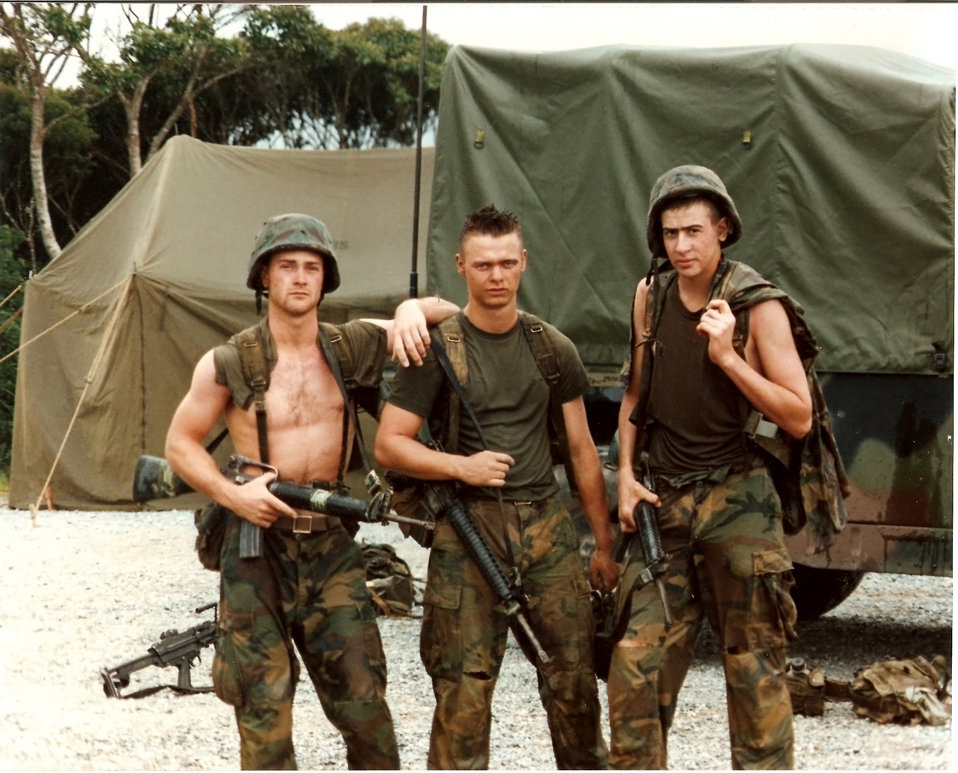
Addison Mohler, the refuge wildlife biologist for Deer Flat National Wildlife Refuge, enlisted in the U.S. Marine Corps on my 17th birthday during the height of Desert Storm. He says: “I wanted to a be grunt and was guaranteed it, so after boot camp I went to Marine Combat Training and School of Infantry a few miles up the road at Camp Pendleton. After graduating, I was sent to the Fleet Marine Force, 3rd Battalion, 5th Marines (Get Some!), which is the most decorated unit in the Marine Corps and based in Camp Pendleton at San Mateo. My days were spent shooting (every weapon organic to a Marine), cleaning weapons, running, jumping out of helicopters, shooting some more and running some more. I won a competition to put me into a platoon of Marines that followed Seal Team 9 around with the 31st Marine Expeditionary Unit, Special Operations Capable in case they needed a reactionary force.” Mohler has a great story about dissecting a mouse that had been killed and identifying “its parts on an MRE box. My lieutenant told me I should be a biologist. Fast-forward 100 years later...I am. “